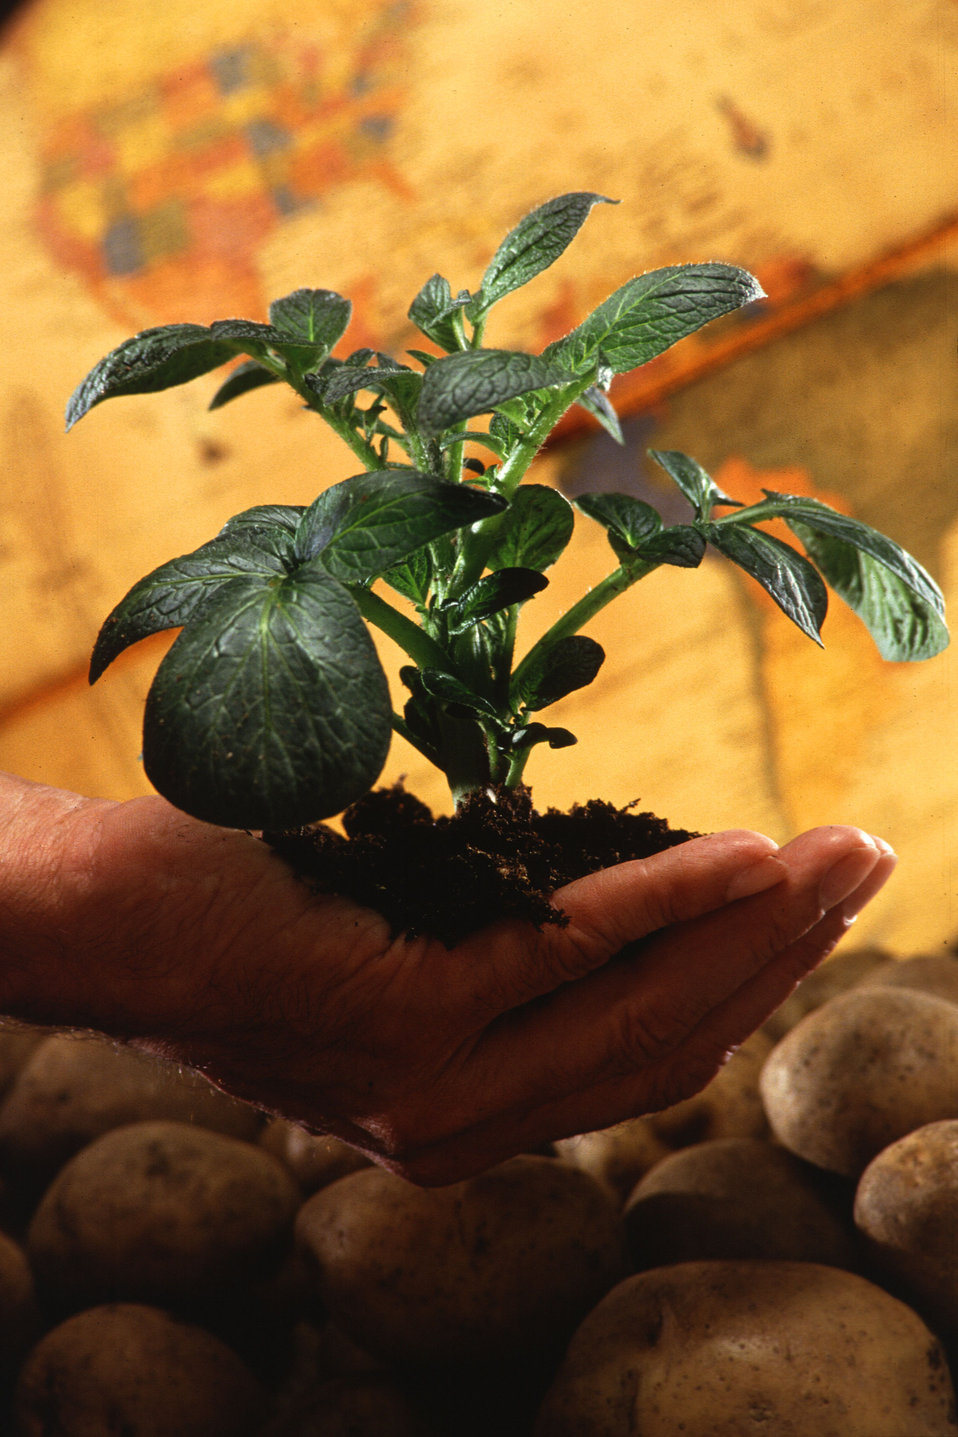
Potato plant breeders must unite desirable processing and fresh-market characteristics with late blight resistance to ensure continuing worldwide availability of this valuable food staple.